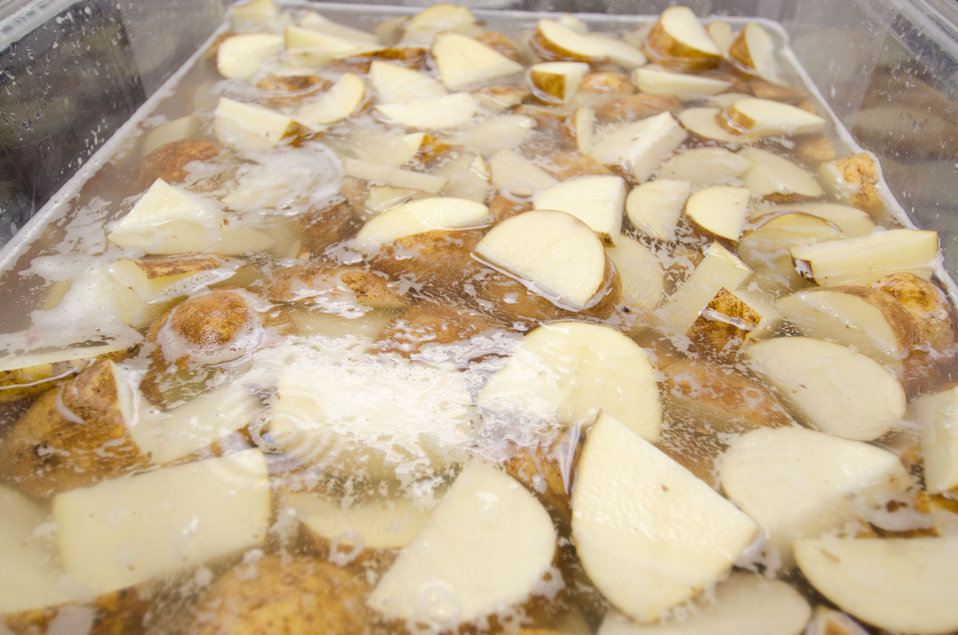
Potatoes soak in a tub of water before San Antonio Food Bank (SAFB) Community Kitchen students cook and mash them for Kids Cafe meals being prepared by Community Kitchen Class 35, in San Antonio, TX, on Monday, October 31, 2011. Other meals prepared by the Community Kitchen include the U.S. Department of Agriculture (USDA) Summer Food Service Program for children during summer months, and the year-round Child and Adult Care Feeding Program (CACFP). The Community Kitchen trains the unemployed, feeds the hungry, and generates public support and revenue through social enterprise. They began creating meals in 2003, with volunteers and the Community Kitchen students looking to further themselves in a promising culinary career. Over 16-week course individuals receive basic culinary training, similar to portions of an accredited culinary institution, to develop their culinary job skills. The program is lead by Chef Rudy Garza and his team of instructor chefs, present training and work demands that build useful job skills. The students focus their new talents on the preparation of meals for area shelters, kids cafes, summer feeding sites (www.summerfood.usda.gov/), and catering services. The San Antonio Food Bank is a non-profit organization that serves as a clearinghouse by receiving and storing truckloads of donated food, produce, and other grocery. SAFB distribute these items to over 500 service agencies that help people in need.
“We couldn’t do what we do without our partnership with USDA’” said President and CEO Eric Cooper. He continues, “We are privileged in partnering (with the USDA) to feeding kids, through the summer, with the Summer Food Service Program, and throughout the year, with the Child and Adult Care Feeding Program (CACFP). Then in our approach to feeding seniors, we partner with USDA in the Commodities Supplemental Food Program (CSFP), and the Senior Farmer’s Market (Nutrition) Program. And then work to bring all our (needy) parties together with our Supplemental Nutrition Assistance Program (SNAP) Outreach. You know, once families have access to food we believe it is important to educate them. Through the support of the SNAP-Education Program we are able to educate them during their time of need. With this comprehensive approach we are really able to get the right food, at the right amount, at the right time, to needy families throughout our community – which allows us to feed the fifty-eight thousand we do, each week.”
SAFB serves 16 counties in Southwest Texas and states, “Nearly one out of every four children and one out of every five adults in Southwest Texas lives in poverty and has difficulty meeting basic nutritional needs.” According to SAFB, sixty-five percent of the people requesting emergency food have children. “Additionally, the senior citizens and those living on a fixed income generally have limited funds for a consistent grocery budget.”
San Antonio is the seventh largest city in the nation with surrounding farms and ranches near its rivers and water supplies. When available they provide fresh surplus produce. Other commodities come from the food industry and manufacturers. The major food brand companies that for various reasons have surplus commodities donate it to SAFB.
The United States Department of Agriculture donates commodities through programs such as The Emergency Food Assistance Program (TEFAP), while Texas farmers supply fresh produce to their Fresh Produce Program.
Public donations come in the form of money, food, volunteer time, and advocacy. Their fleet of trucks to pickup and deliver food as needed.